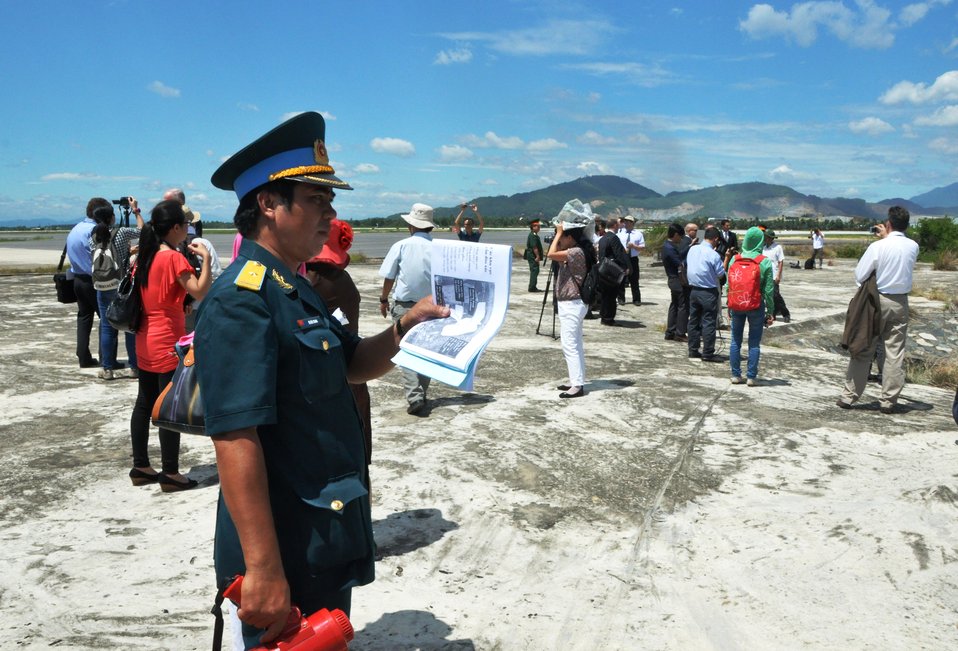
Photographers and visitors tour the airport site at the Environmental Remediation of Dioxin Contamination at Danang Airport Project Launch

Danang, August 9, 2012